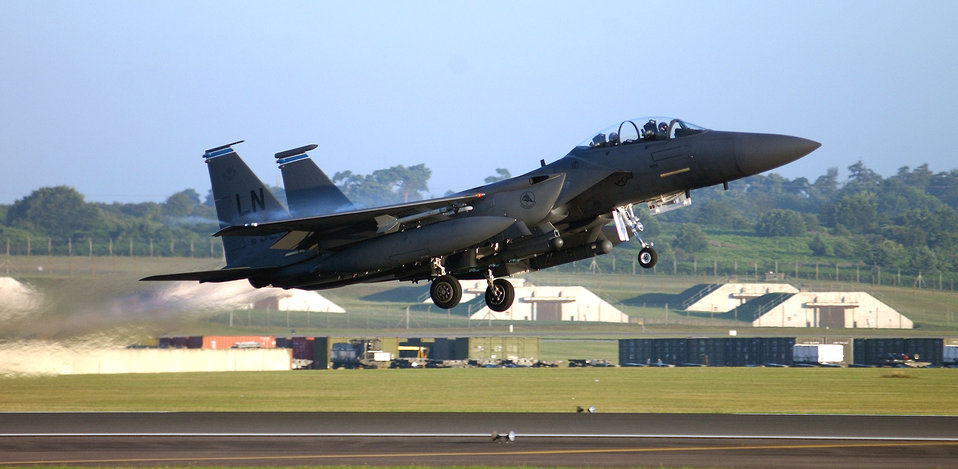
The journey begins

ROYAL AIR FORCE LAKENHEATH, England -- A 494th Fighter Squadron F-15E Strike Eagle takes to the sky en route to a deployment supporting Operation Iraqi Freedom, July 14.